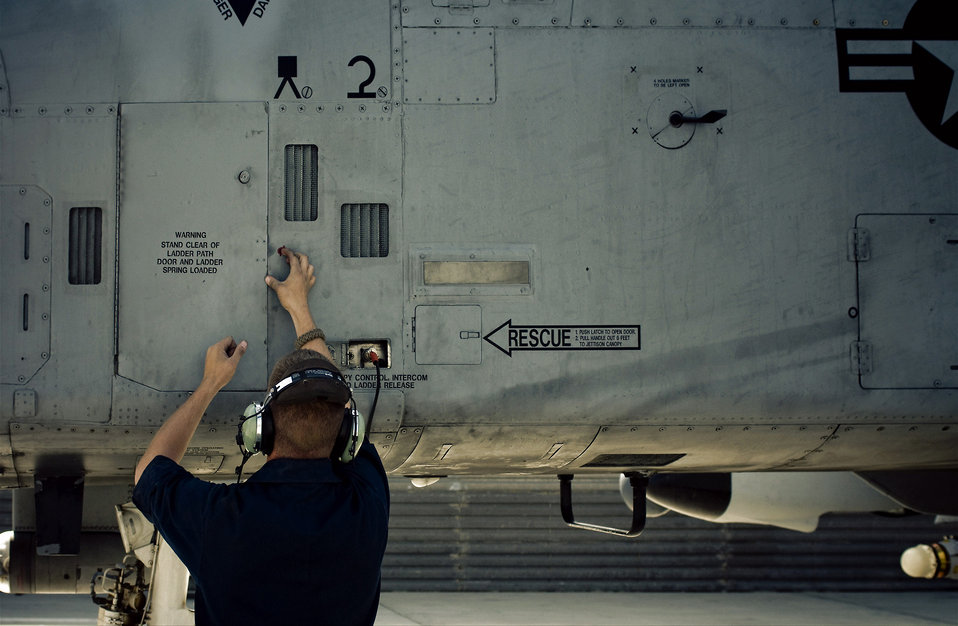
Ready to go

Senior Airman Benjamin Connery closes the crew boarding ladder door and disconnects his headset from the communications port of a A-10 Thunderbolt II Oct. 18 at Bagram Airfield, Afghanistan. Both crew chief and pilot stay in constant communication throughout the preflight inspections allowing the crew chief to be the pilot's eyes and ears outside the aircraft. Airman Connery is a 455th Expeditionary Aircraft Maintenance Squadron A-10 crew chief and deployed from Moody Air Force Base, Ga. He is from Cashmere, Wash.